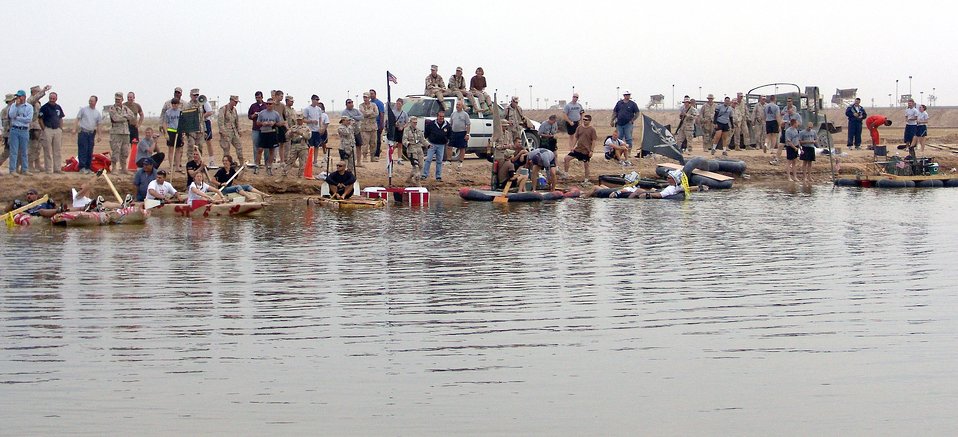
Rapid rafting

CAMP BUCCA, Iraq (AFPN) -- Two-person rafting teams wait for the start of the first-ever Camp Bucca Raft Race. More than 17 Air Force, Army and Navy teams participated in the Nov. 13 event. The Army's